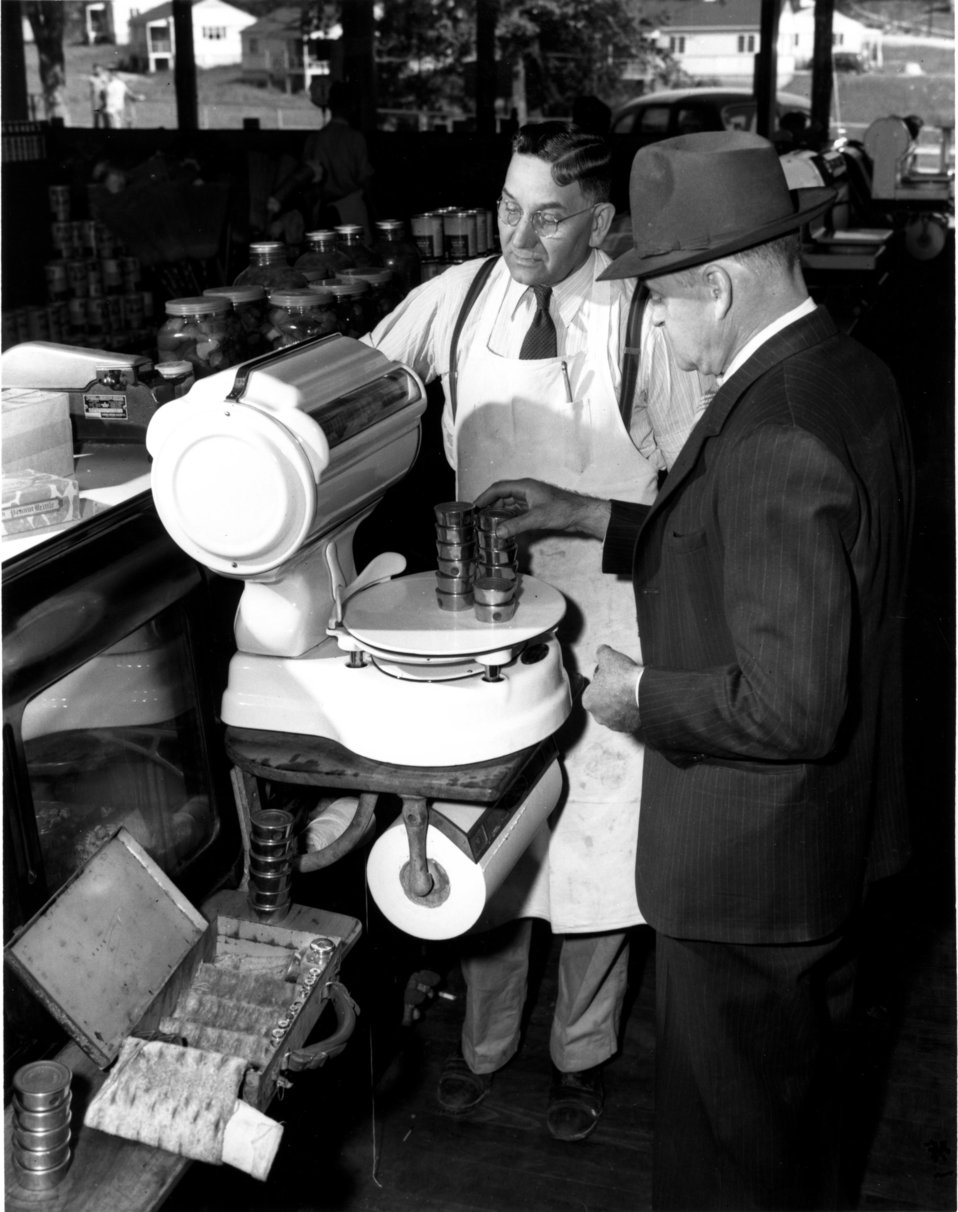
Daily Life at Oak Ridge